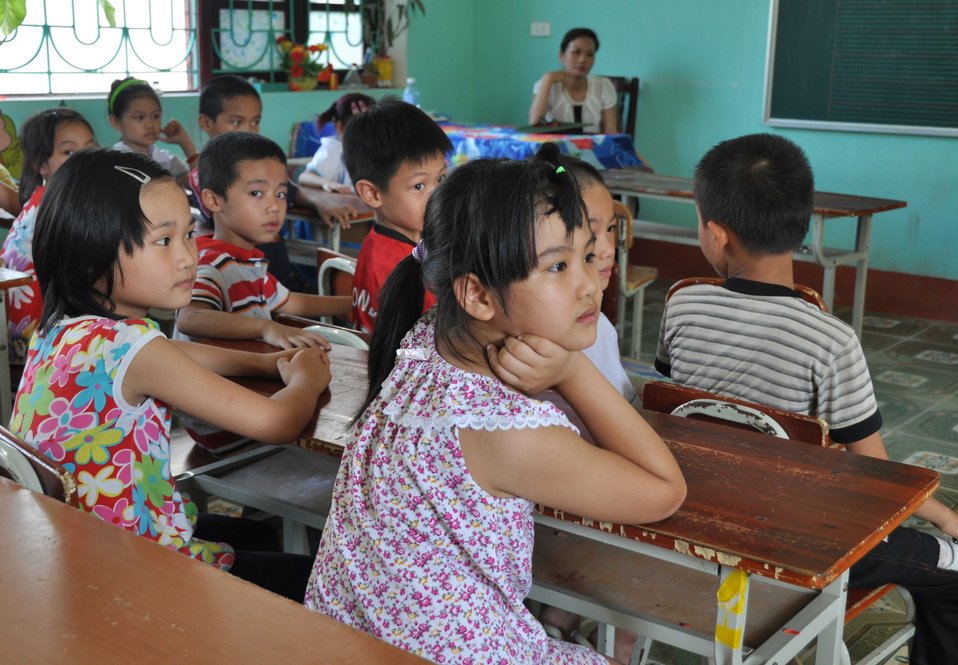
USAID supports deworming education and medication distribution in Bac Giang Province

May 20, 2013